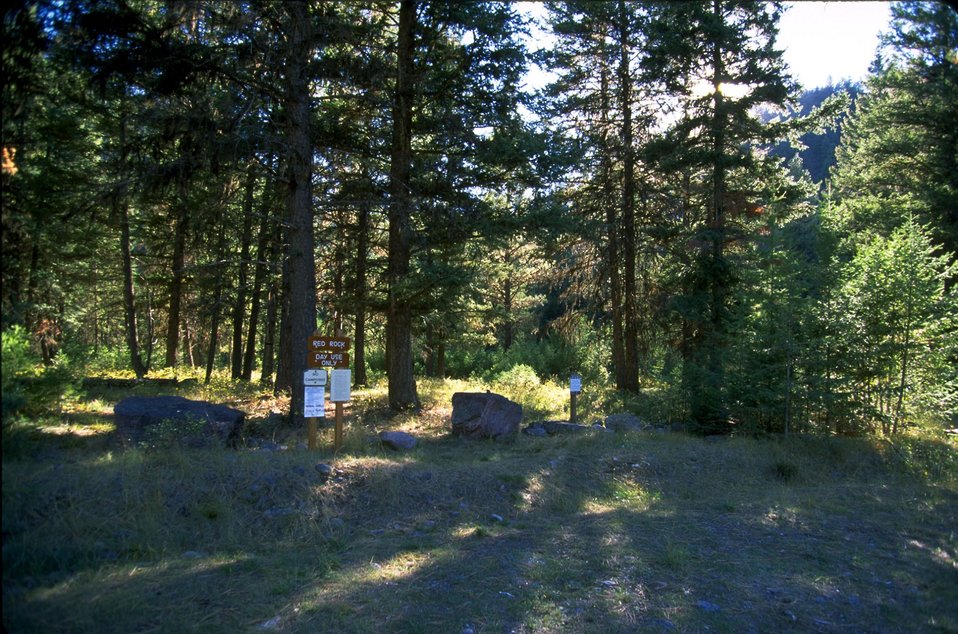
Red Rocks day use area along Blackfoot River